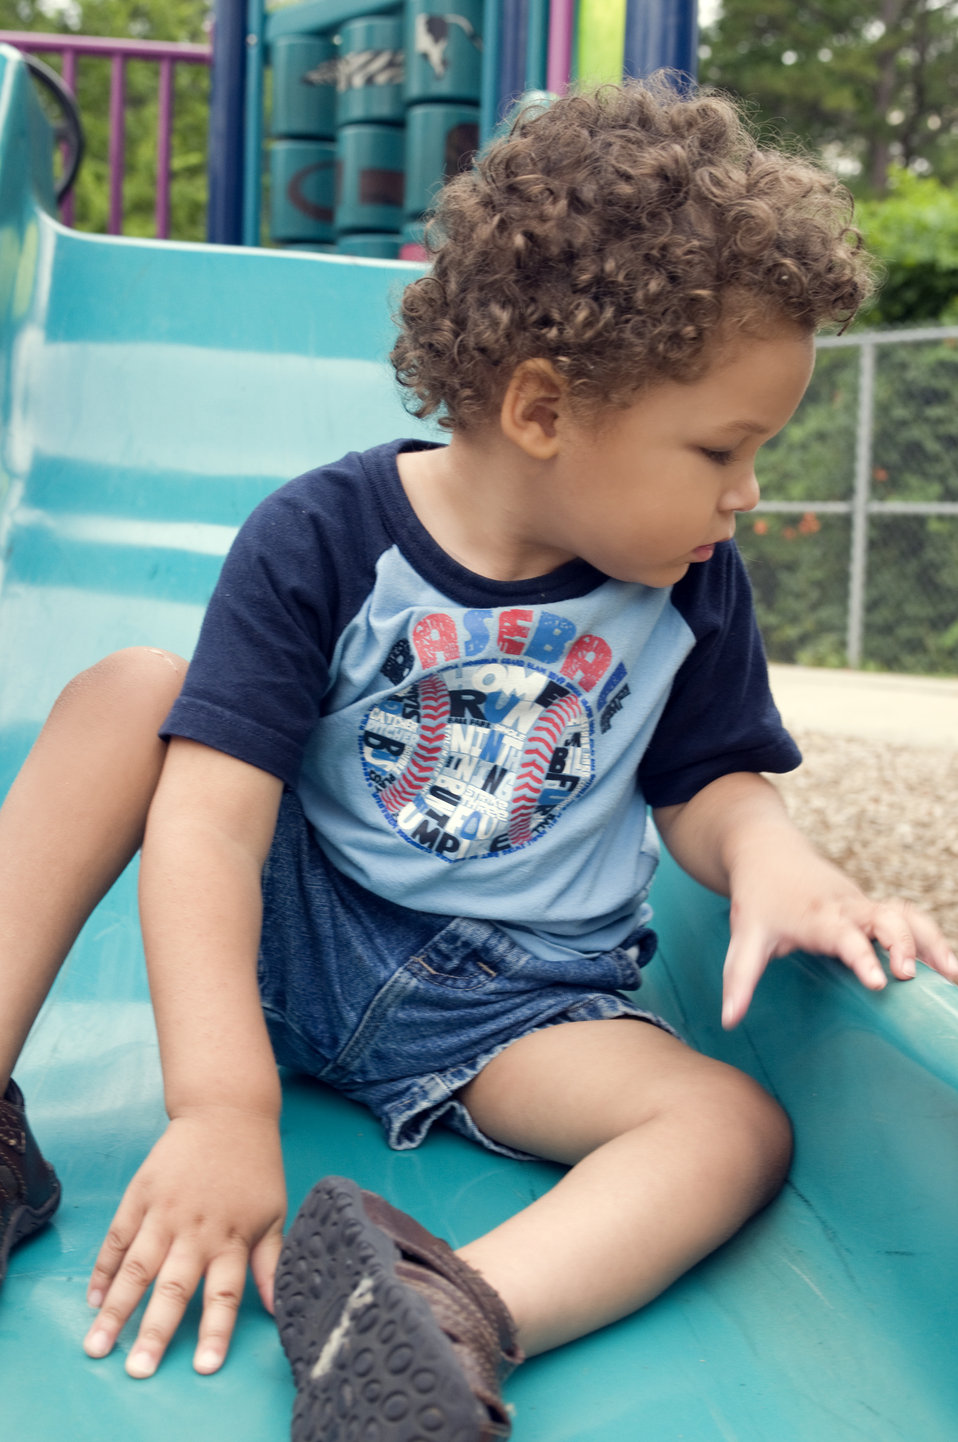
The young boy pictured here was seated on a slide at a community playground, and was wearing a darkly-colored t-shirt and denim shorts, both able to shield him from the sun's harmful rays. Sunscreen applied to his sun-exposed skin, would also have been highly recommended.